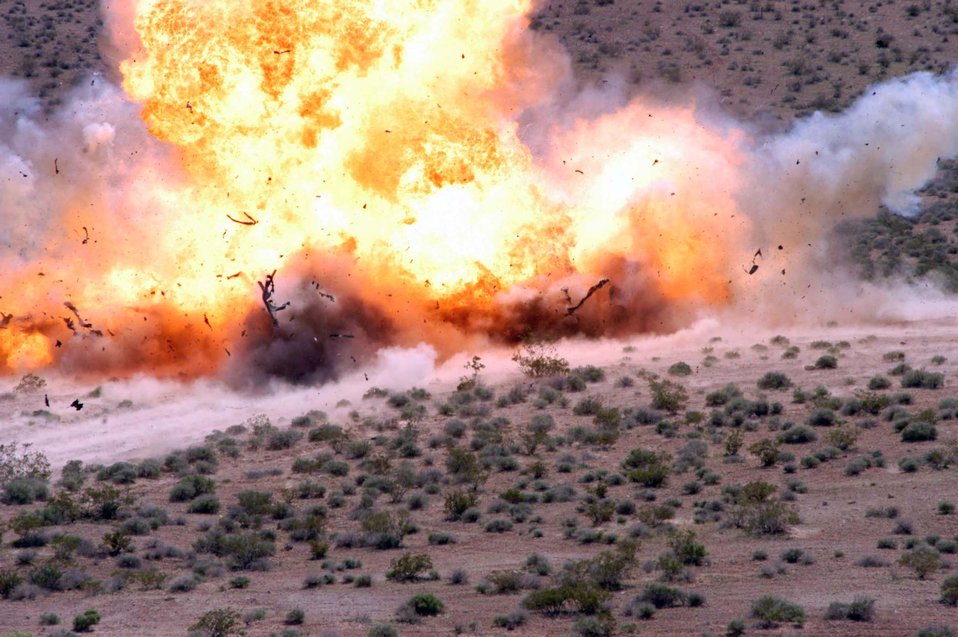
Bombs, CSI, crime scene investigators

NELLIS AIR FORCE BASE, Nev. -- About 50 pounds of ammonium-nitrate fuel was used to destroy a small vehicle here March 29. The car was bombed as a part of a large-vehicle bomb post-blast investigation class. The class trains bomb technicians worldwide in the post-blast investigation process after terrorist attacks.